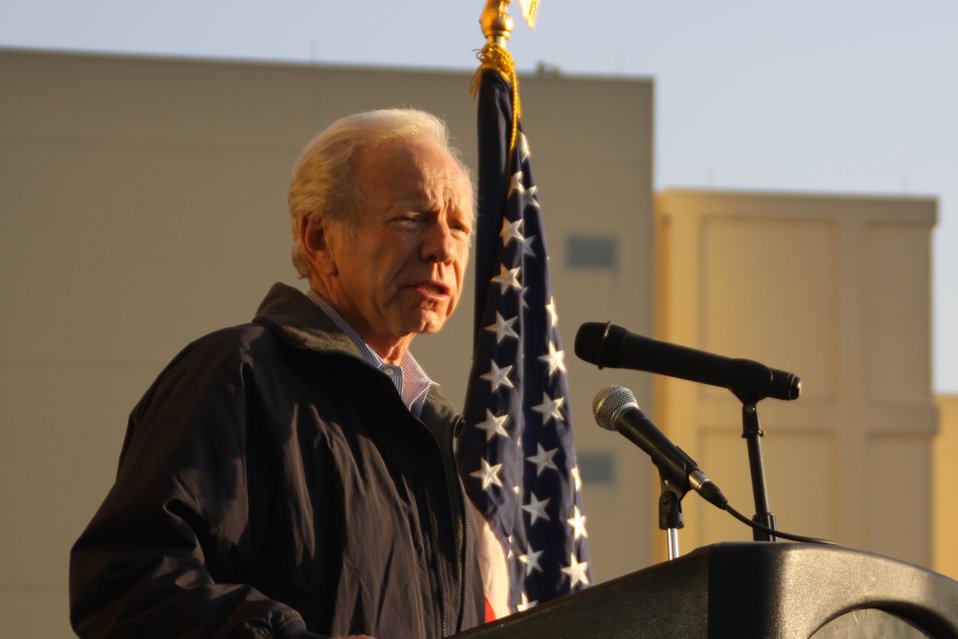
Senator Lieberman